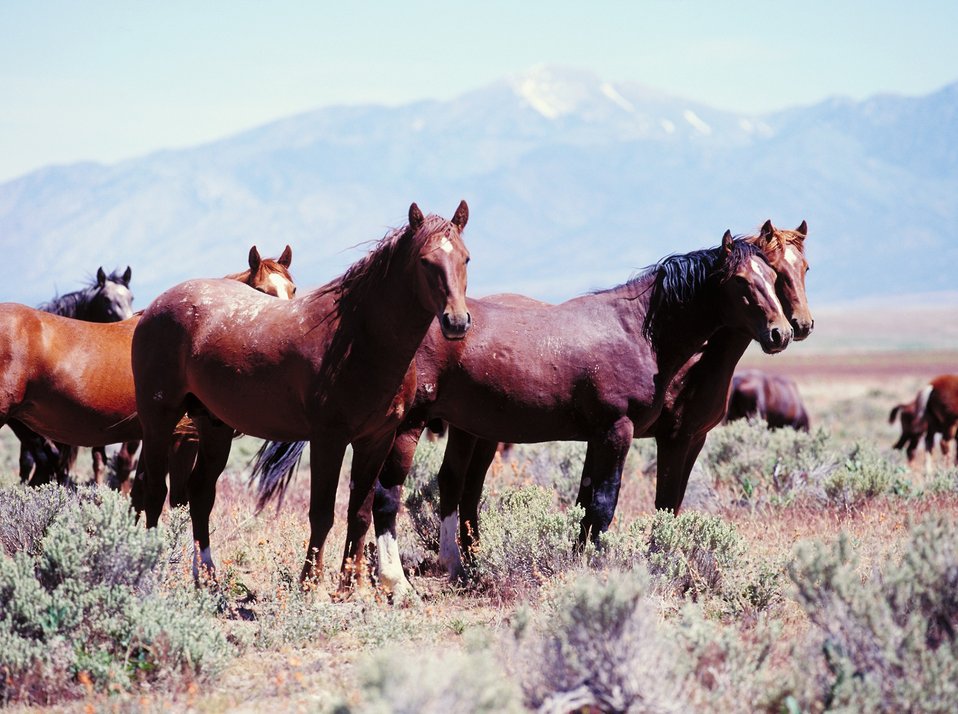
Onaqui Herd near Dugway, Utah.